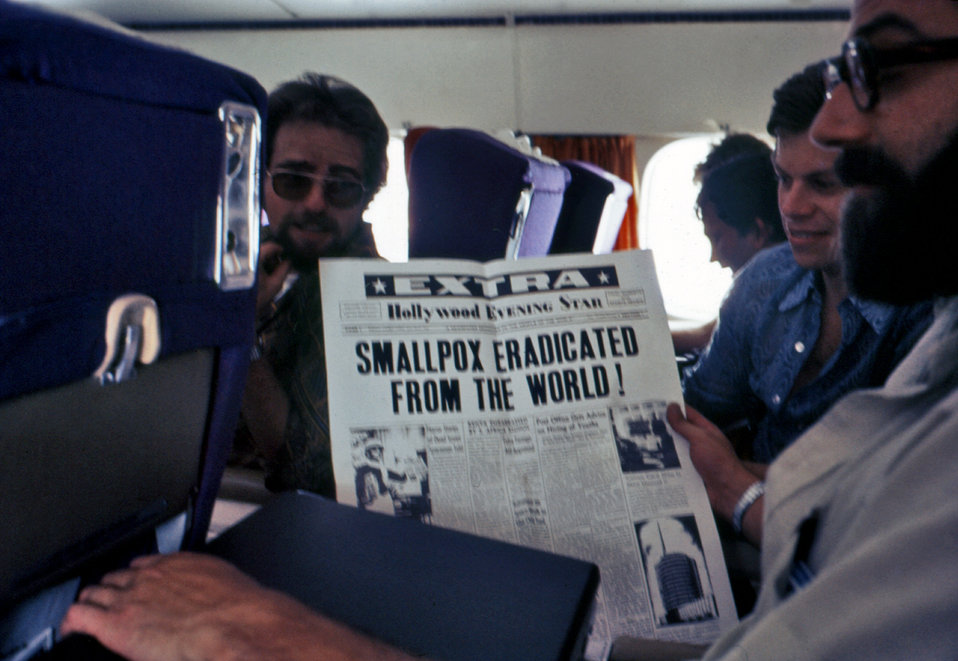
These individuals on an airplane were admiring a newspaper article entitled 'Smallpox Eradicated from the World!'